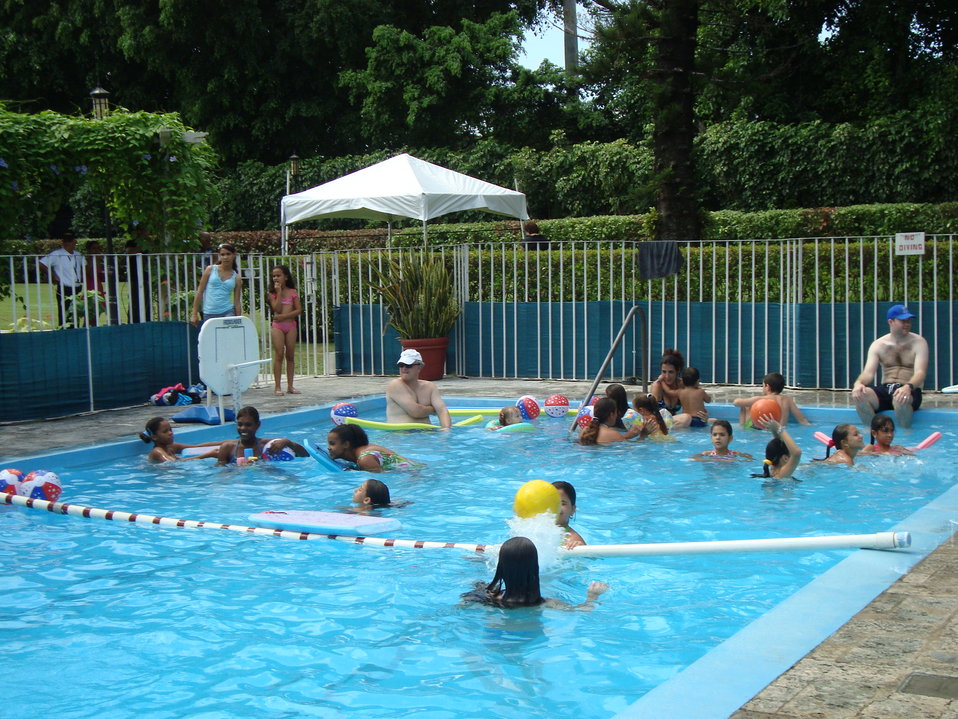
Guests keep cool in the pool at the United States Interest Section Havana in Cuba's U.S. Independence Day celebration at Chief of Mission Jonathan D. Farrar's residence in Havana, Cuba, on July 2, 2010.